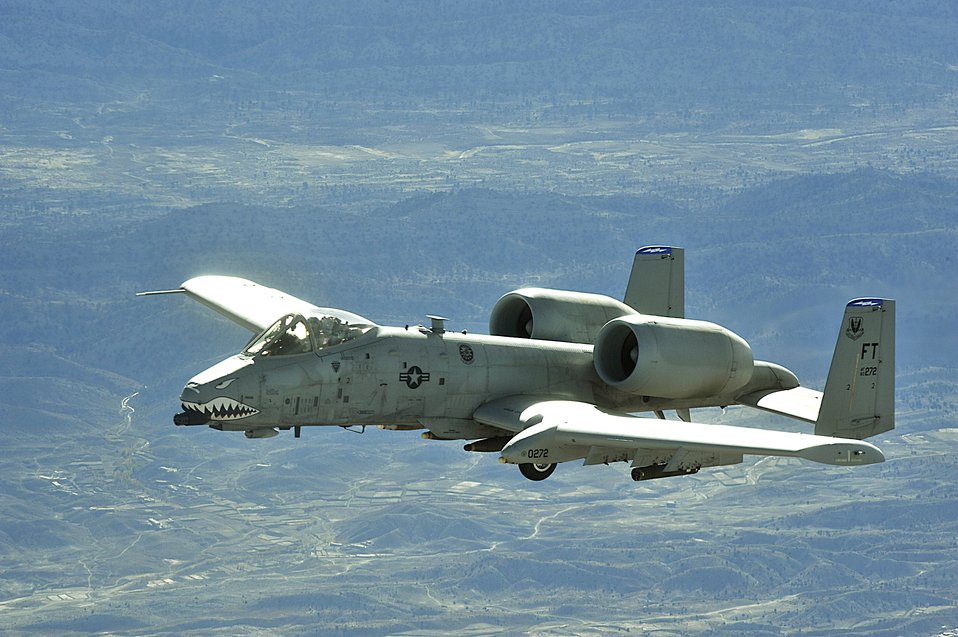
Jan. 12 airpower summary: A-10s deter enemy actions

An A-10 Thunderbolt II provides top cover over Afghanistan in support of Operation Enduring Freedom. A-10s perform shows of force to deter enemy activities and provide armed aerial overwatch for coalition ground forces.